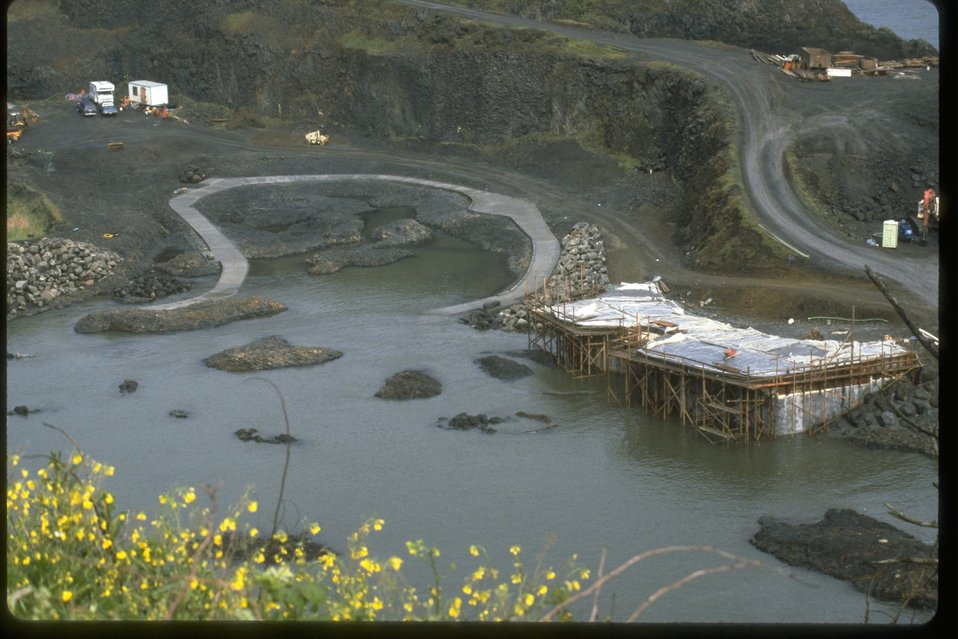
View of the construction at Quarry Cove from above.